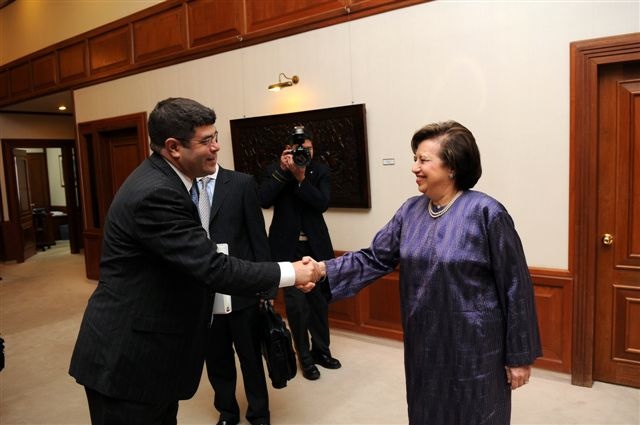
Deputy Secretary Wolin's Trip to the Pacific Rim

On Wednesday, May 18, 2011, Deputy Secretary Neal Wolin met with Central Bank Governor Tan Sri Dr. Zeti Akhtar Aziz in Kuala Lumpur, Malaysia.